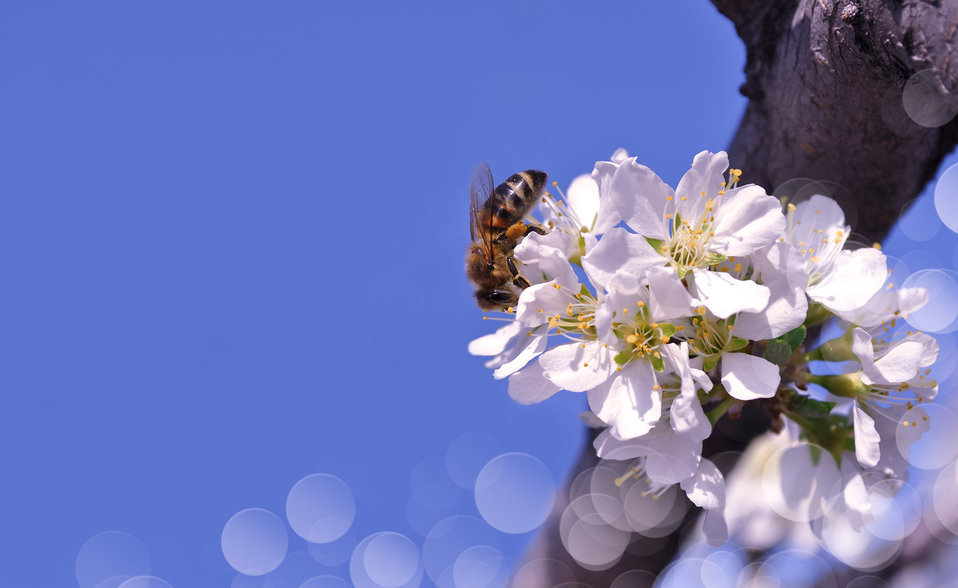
Bee on flowers

A bee collects honey from white flowers on a branch..